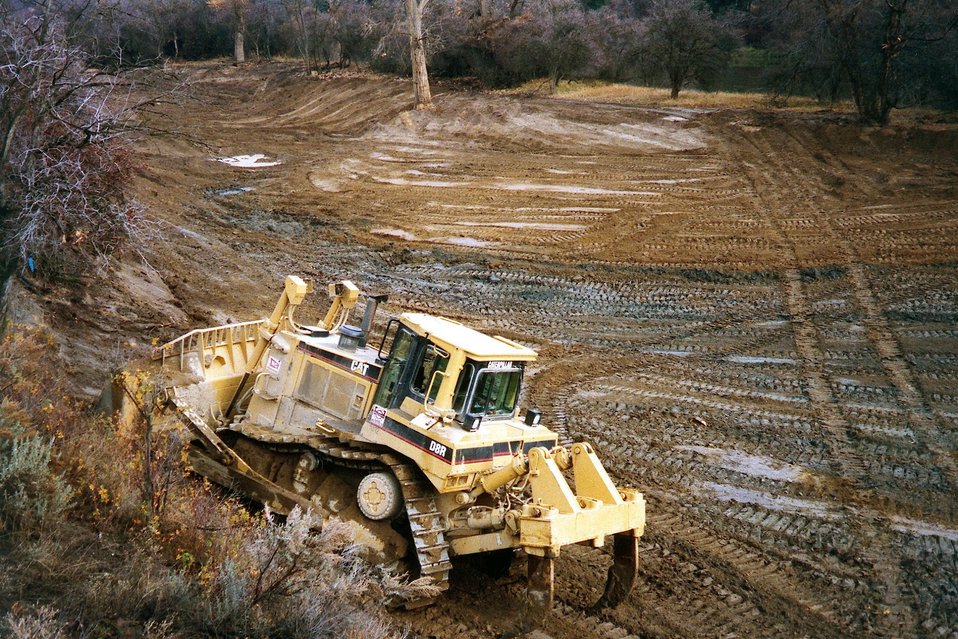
AML. Kaaba-Texas Mine tailings.